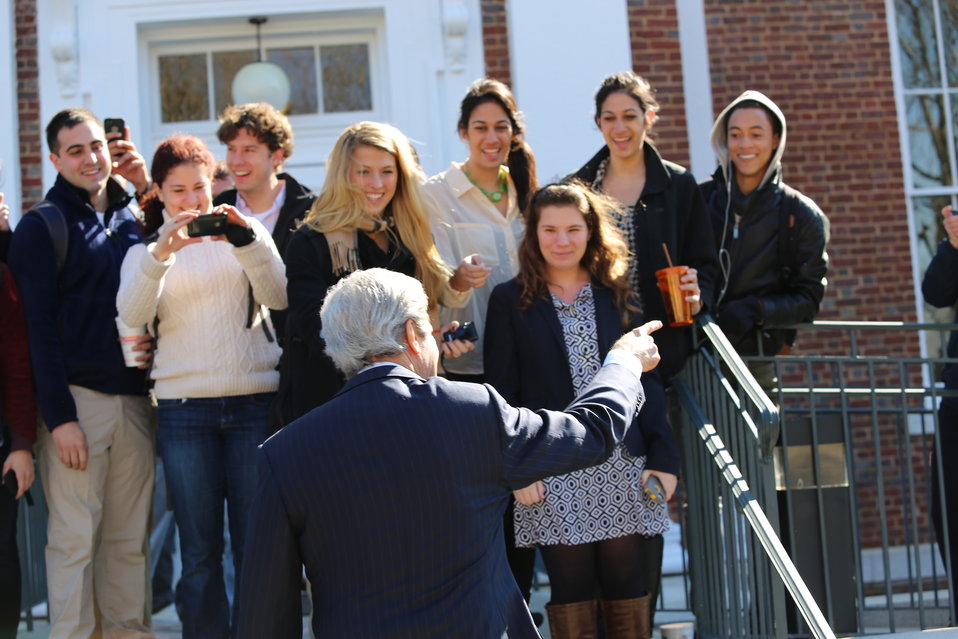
Secretary Kerry Meets With UVA Students

U.S. Secretary of State John Kerry meets with students at the University of Virginia in Charlottesville, Virginia, February 20, 2013.